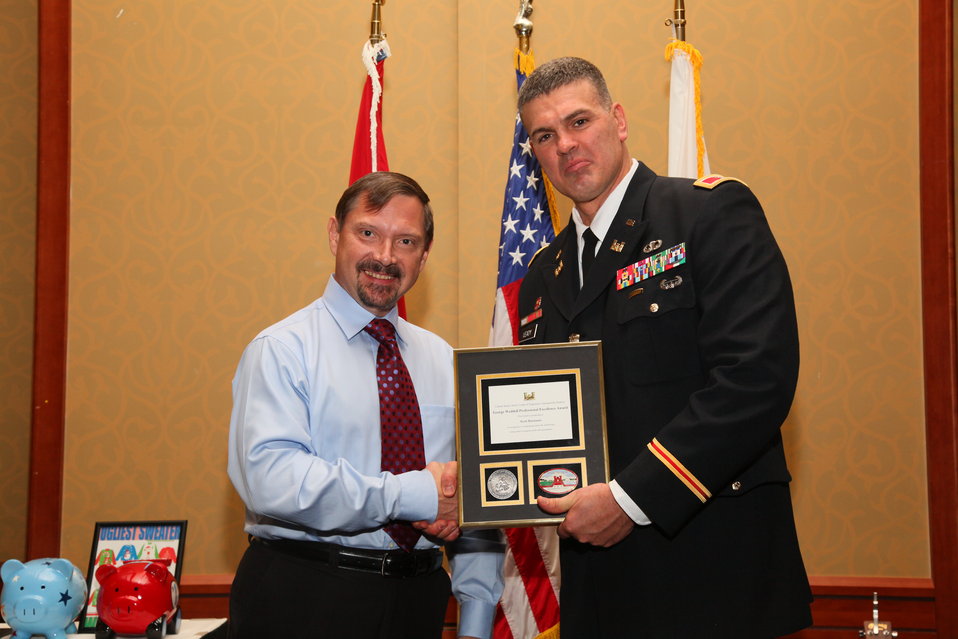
Sacramento District Holiday Party 2011